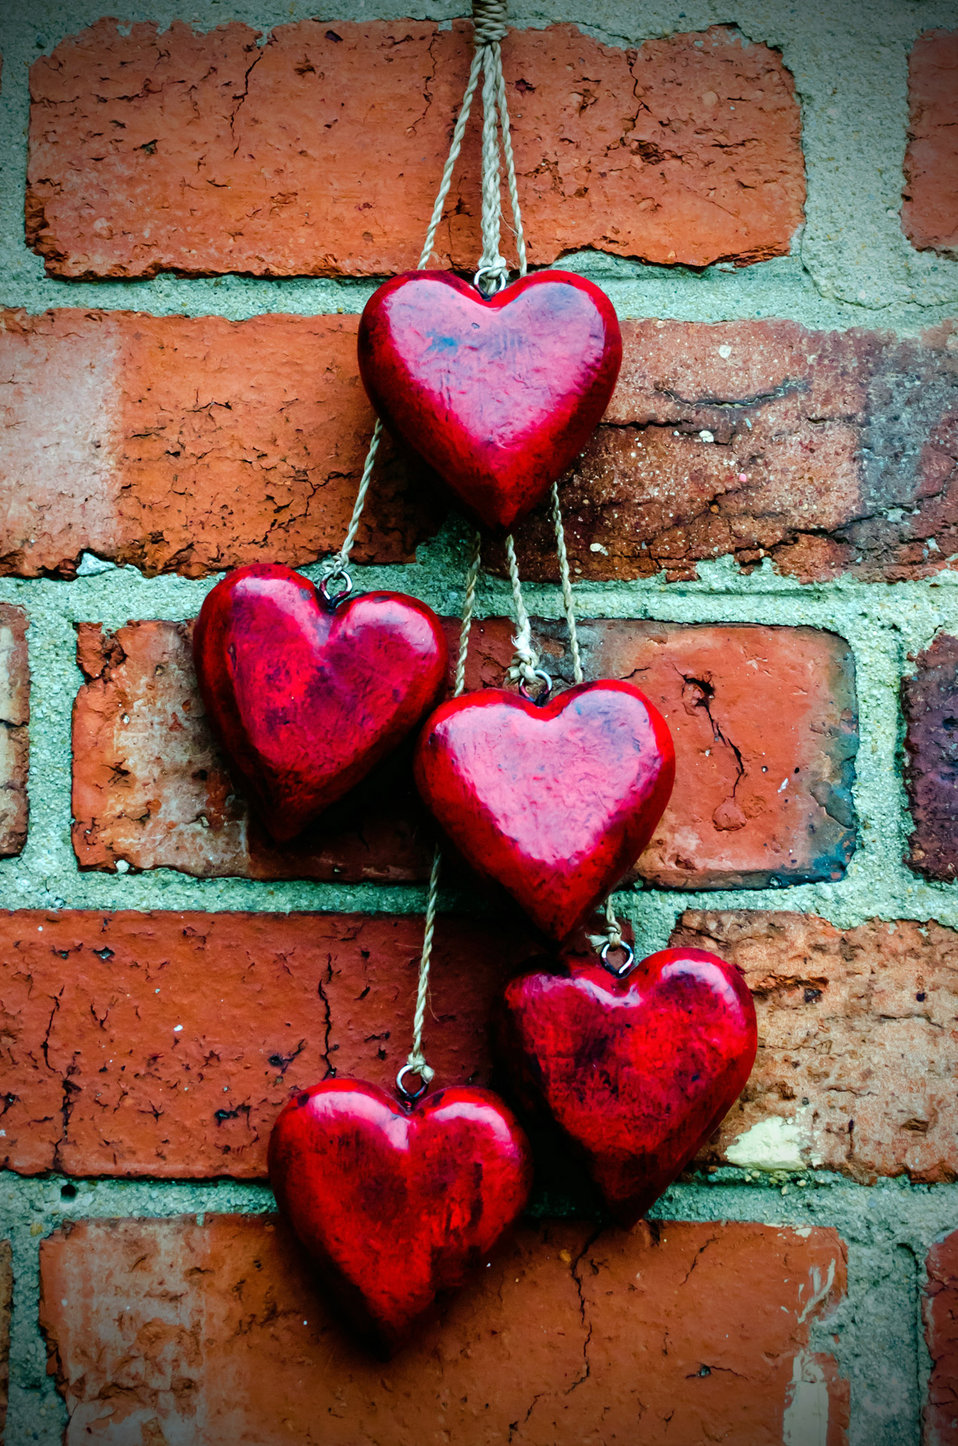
Red heart on a brick wall.